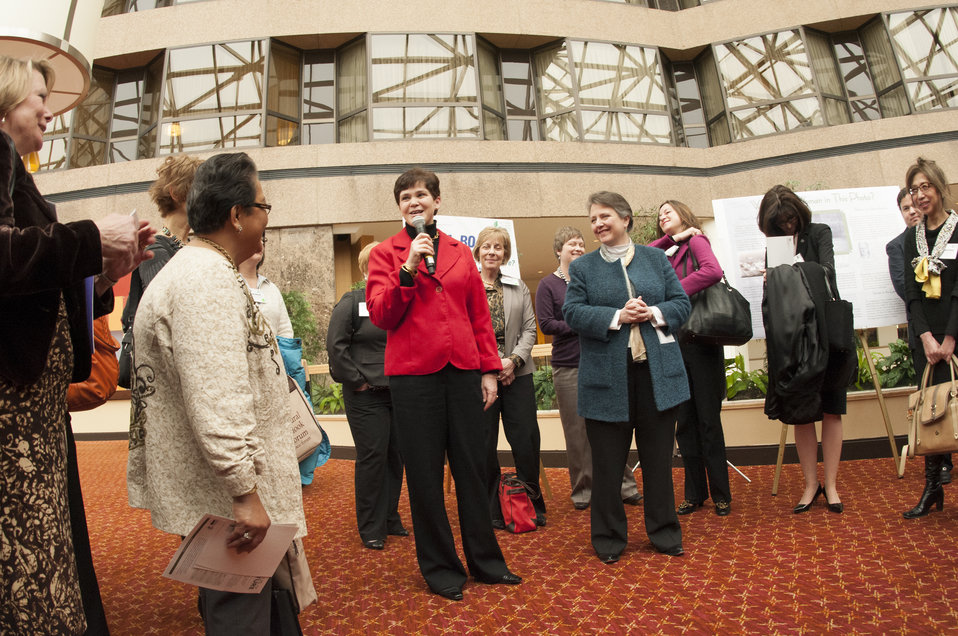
The U.S. Department of Agriculture (USDA) 2013 Agricultural Outlook Forum was held at the Crystal Gateway Marriott Hotel in Arlington, VA on Friday, Feb. 22, 2013. Agriculture Deputy Secretary Kathleen Merrigan and Agriculture Chief of Staff Krysta Harden participated in the Women in Agriculture-Speed Networking Event, which encouraged and promoted the participation of women in American agriculture.